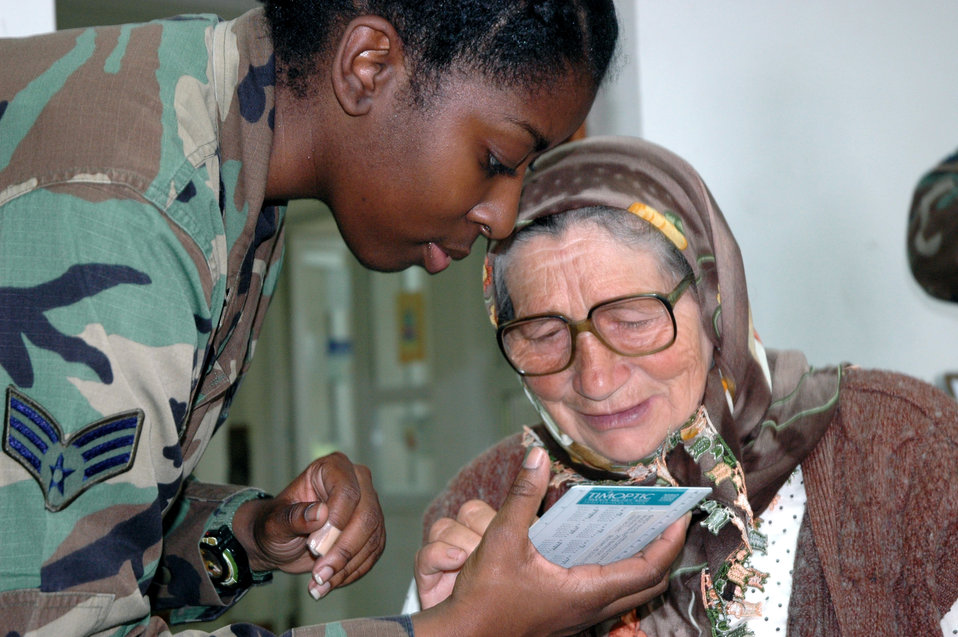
Humanitarian efforts

Senior Airman Jocelyn Campbell gives a woman information to go with a new pair of glasses as part of the 175th Medical Group's humanitarian efforts in Bosnia-Herzegovina. The Maryland Air National guardsman is working at a school in the village of Skugric. She is one of 80 guardsmen providing medical aid to 14 villages around the Srebrenica area.